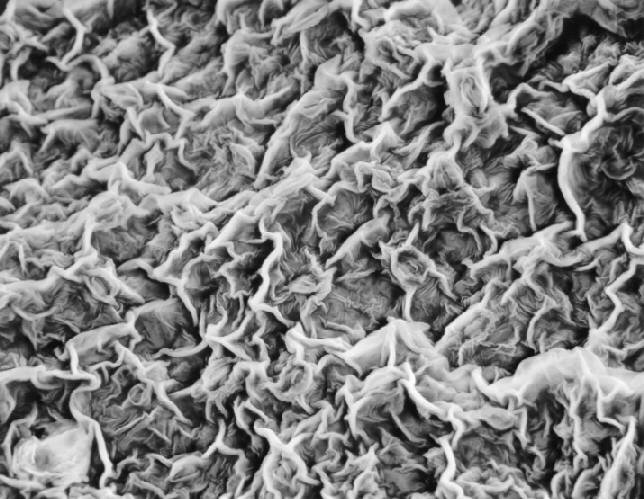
Scanning electron micrograph (SEM) of basil leaf, Ocimum basilicum.